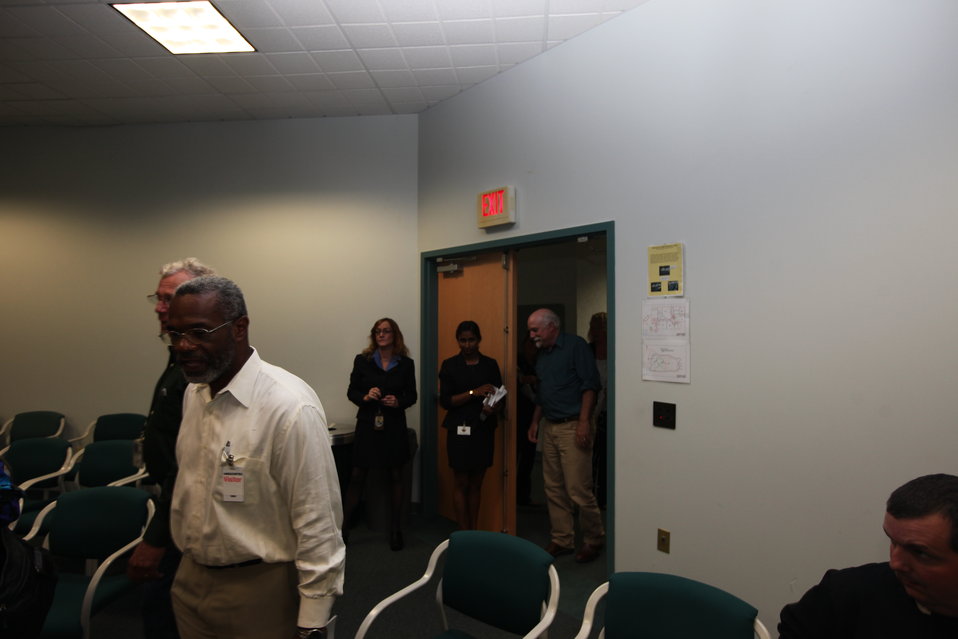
Northeast Region Employee Appreciation Awards